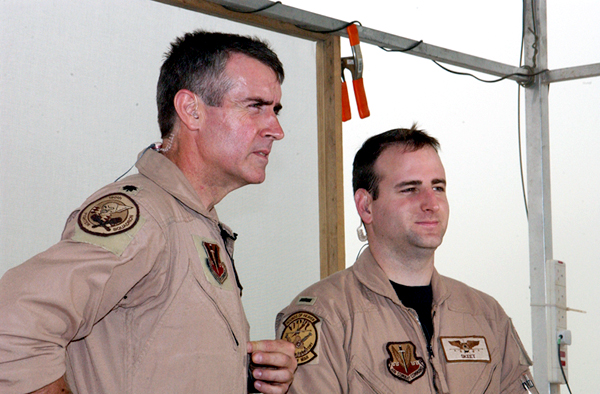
Q & A

OPERATION IRAQI FREEDOM -- Lt. Col. Mike Webb and 1st Lt. Chad Martin, 332nd Air Expeditionary Wing fighter pilots, answer questions to stateside reporters during a live satellite feed from Kuwait City.